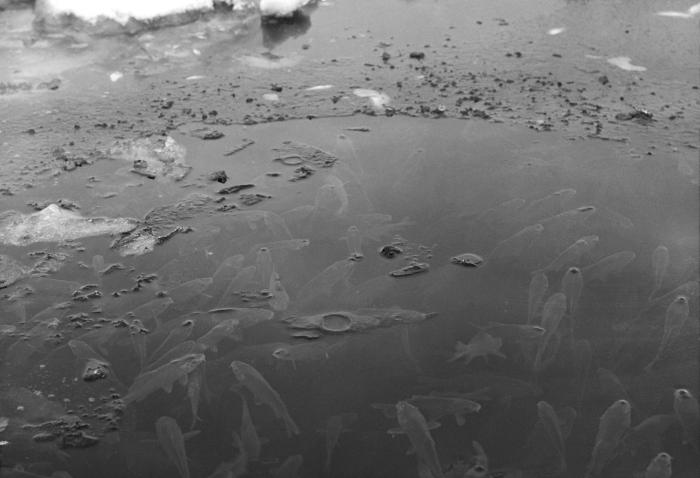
The young carp shown swimming in this historic 1936 photograph, were displaying signs of oxygen hunger by 'gulping' air through the lake surface interface. The picture was taken at Lake Merion, near Brownton, Minnesota on February 3 of that year, and offered as evidence that pollution of the water had occurred, which caused the oxygen level in the water to dramatically decline.